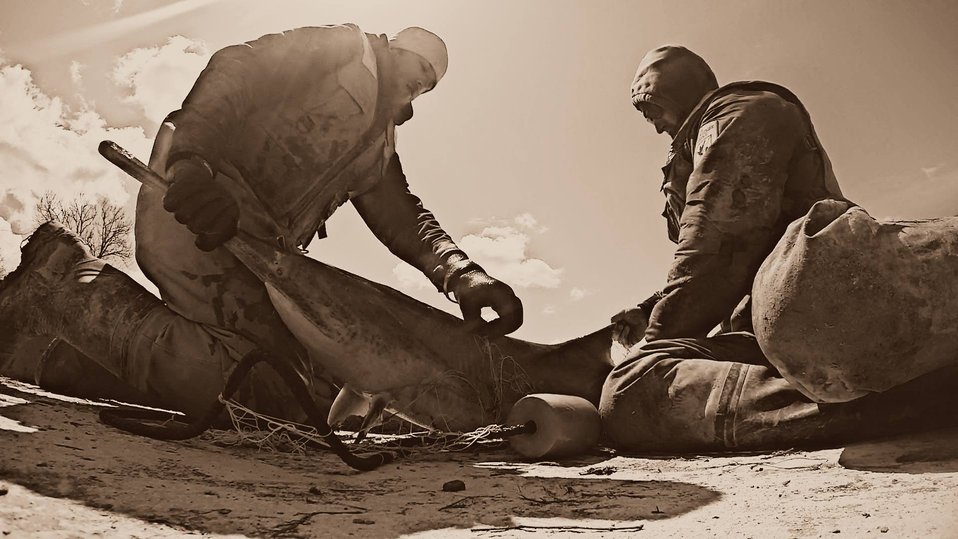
Paddlefish Release

We just finished three days of gill netting in the White River, which is a tributary of the Missouri River. We were there with the South Dakota Game, Fish and Parks to harvest paddlefish.

Over 150 paddlefish were captured, but only the best 17 were recruited for spawning. Spawning will take place in about a week when water temps start to climb.